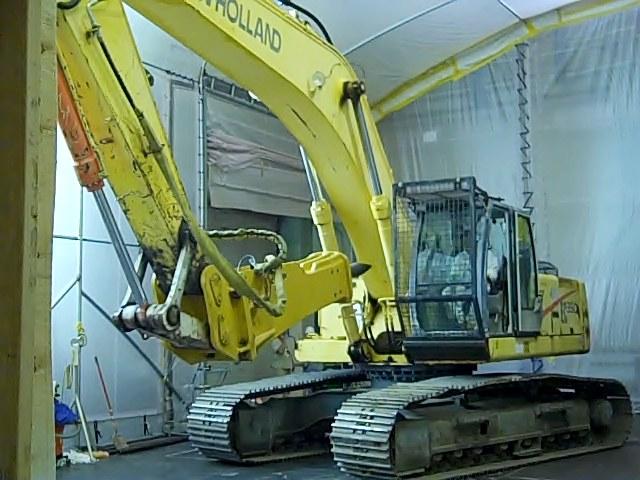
Brookhaven excavator

The Lab is using a more effective excavator, pictured here inside a contamination control enclosure, to demolish the Brookhaven Graphite Research Reactor Bioshield.